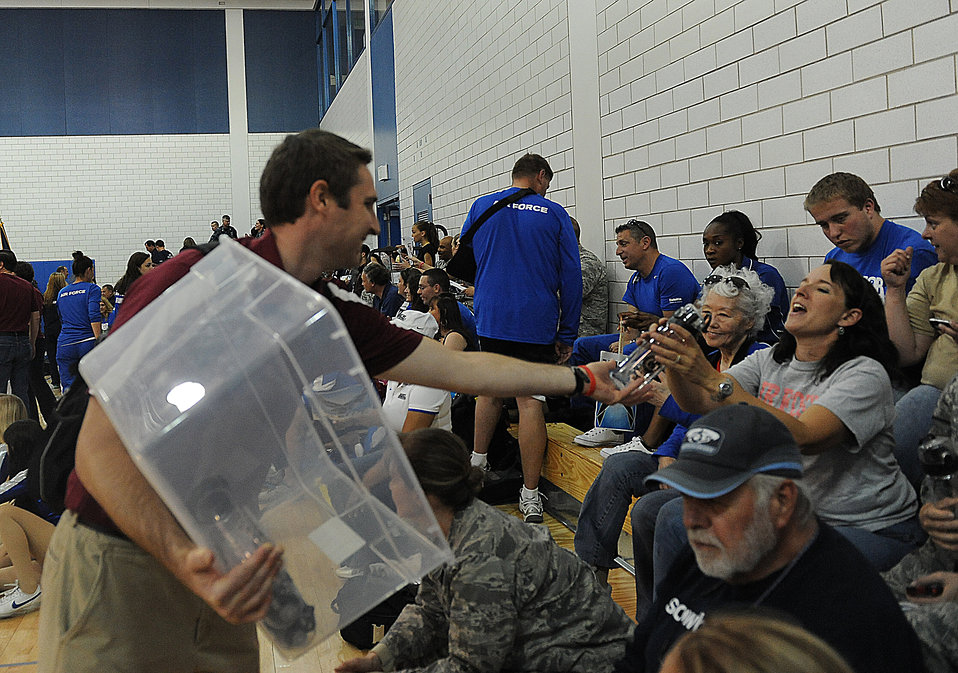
Warrior Games

Paul Fitzgerald, left, a volunteer, hands a bottled water to an spectator during a wheelchair basketball game between the Air Force and the Navy teams during Warrior Games 2012 at the U.S. Air Force Academy in Colorado Springs, Colo., May 3, 2012.